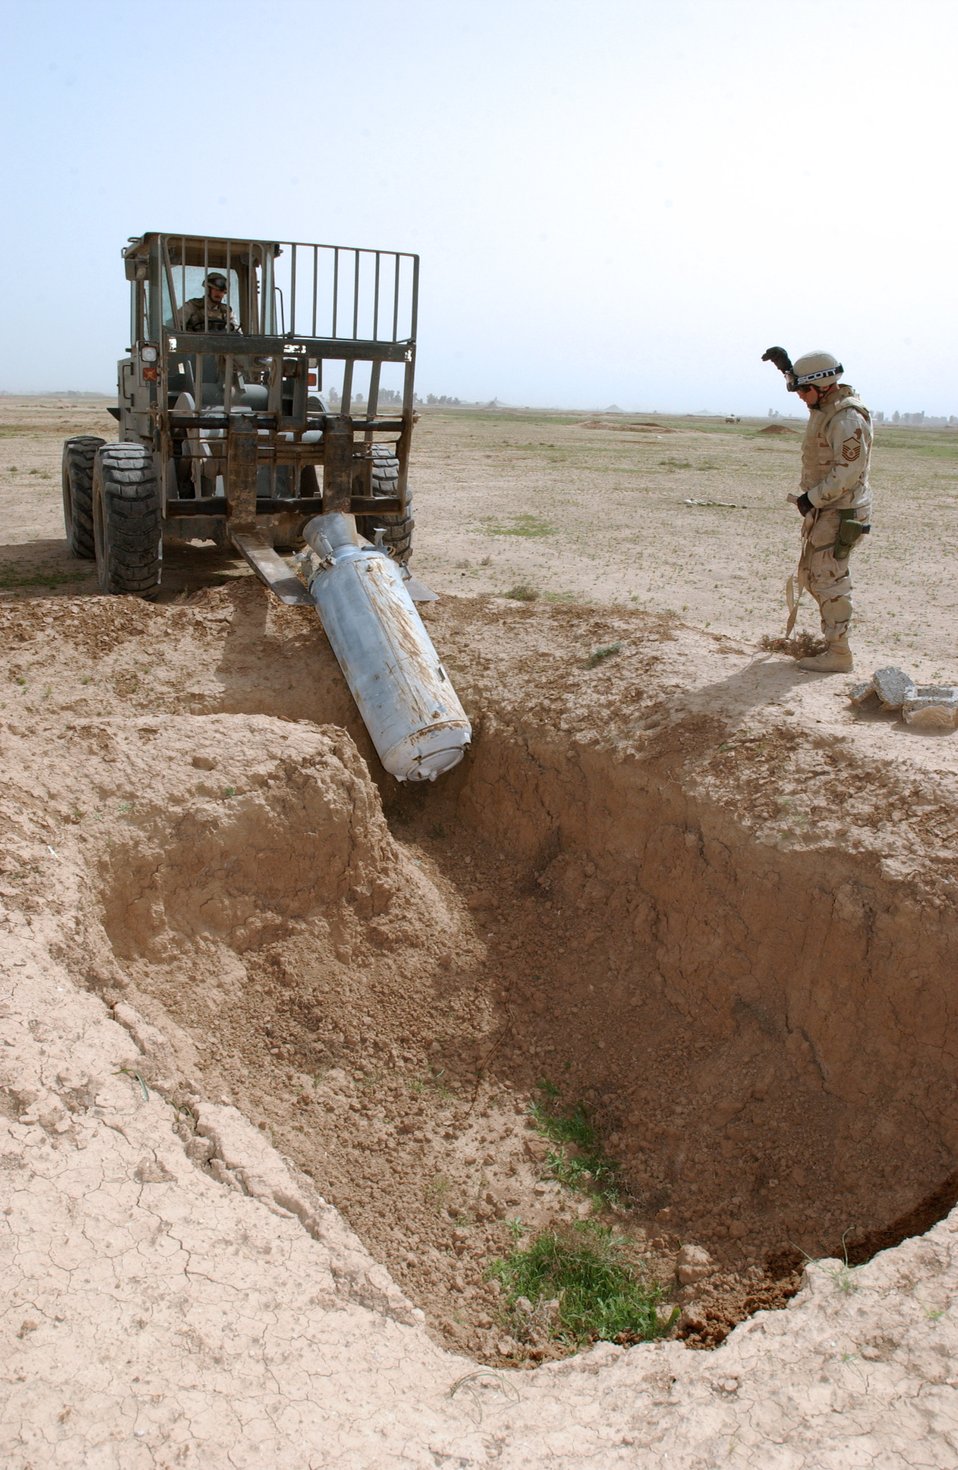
Having a blast

KIRKUK, Iraq -- Staff Sgt. Brandon Koebbe uses a 10-ton forklift to move a rocket motor into a disposal pit while Master Sgt. Kevin Johnson guides him. Including the rocket motor, 9,000 pounds of explosives were disposed of in the detonation. The Airmen are explosive ordnance disposal specialists assigned to the 506th Expeditionary Civil Engineer Squadron at nearby Kirkuk Air Base.